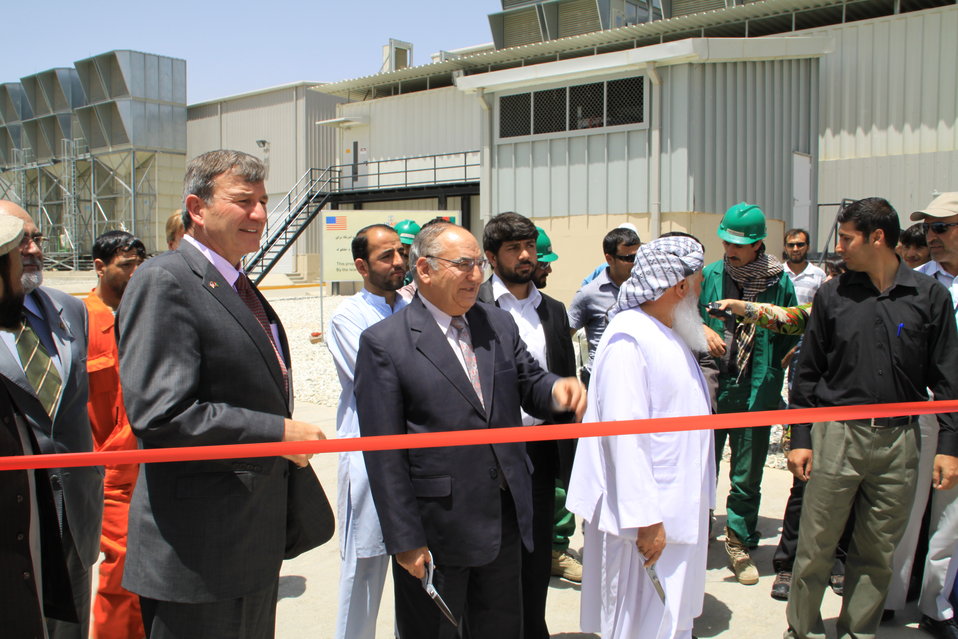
105 MW Tarakhil Power Plant Handover